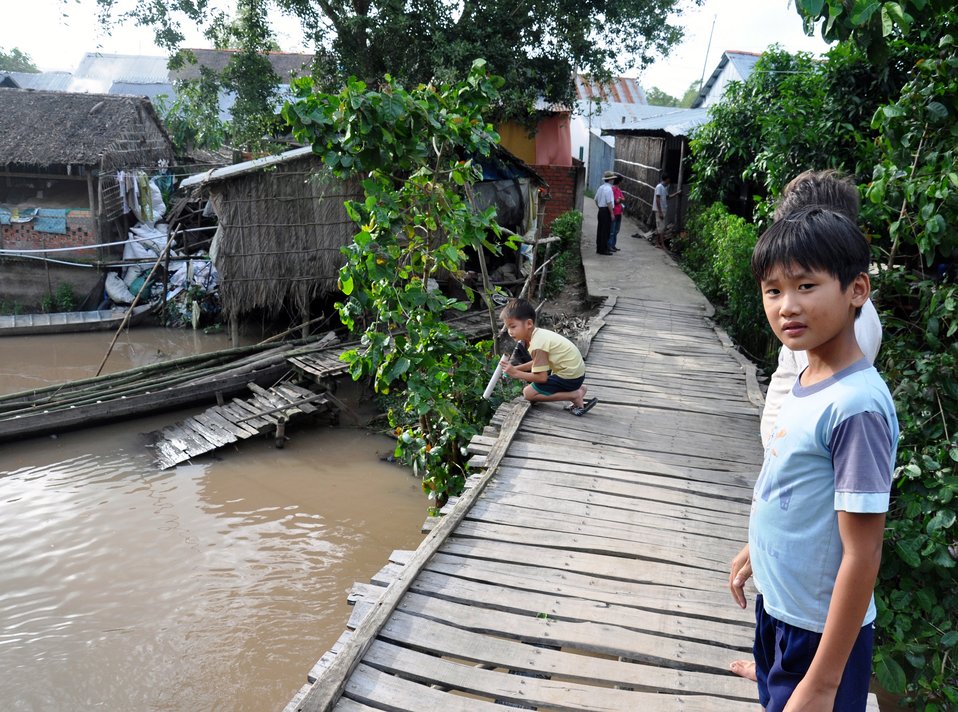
Life on the Mekong Delta

USAID provides training and support to poultry farmers to stem the spread of avian influenza.